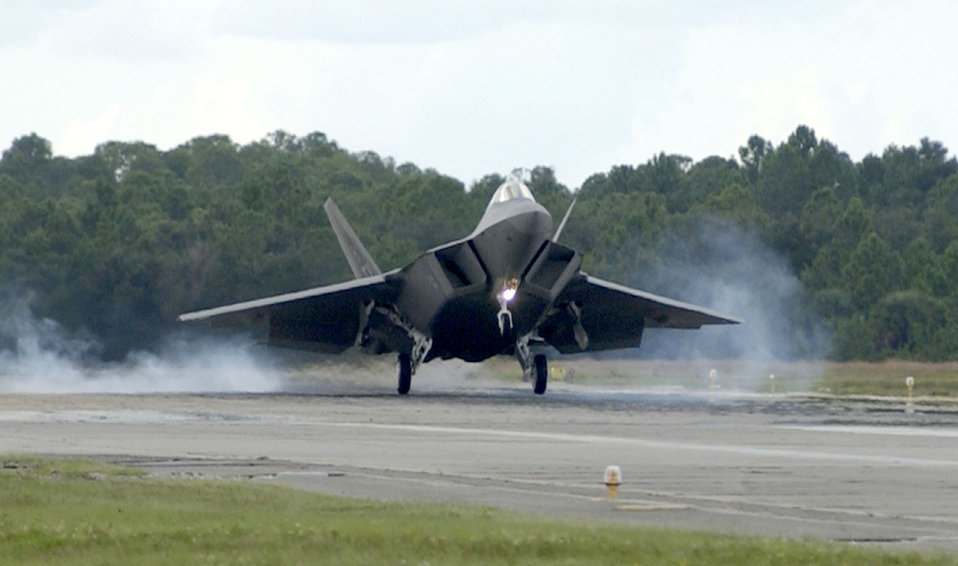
Raptor lands

TYNDALL AIR FORCE BASE, Fla. -- The 325th Fighter Wing's first permanently-assigned F/A-22 Raptor lands here Sept. 26. Tyndall, an Air Education and Training Command installation, was selected to serve as the Air Force's primary F/A-22 training base. The aircraft was piloted by Lt. Col. Jeff Harrigian, 43rd Fighter Squadron commander here.